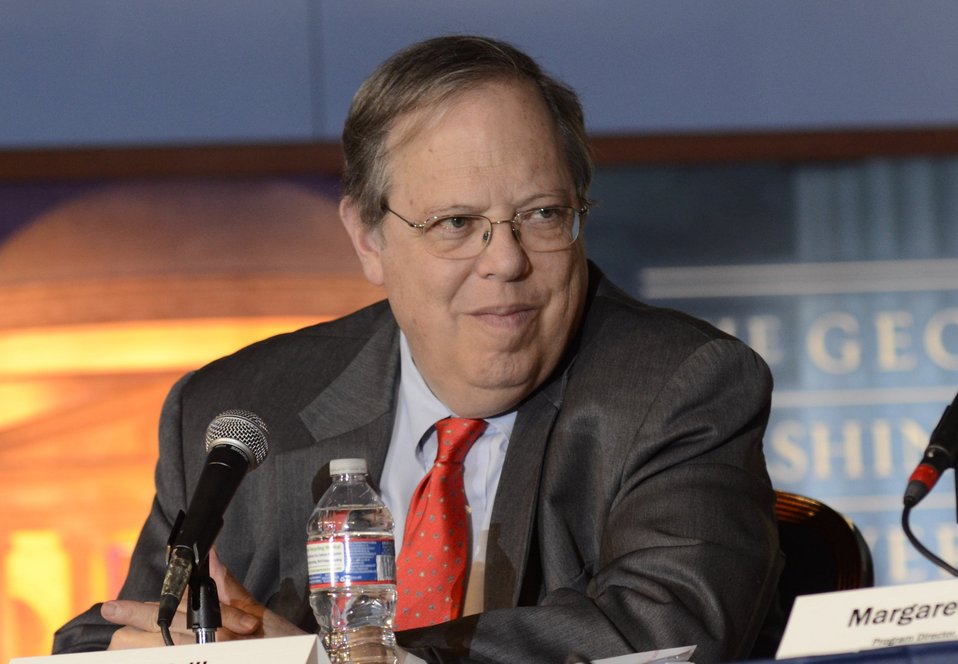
Jim Weill was a member of the panel for 'Shaping the Farm Bill for a Sustainable Future.' Forum at The Trachtenberg School of Public Policy and Public Administration, George Washington University in Washington, D.C., on Thursday, March 1, 2012.